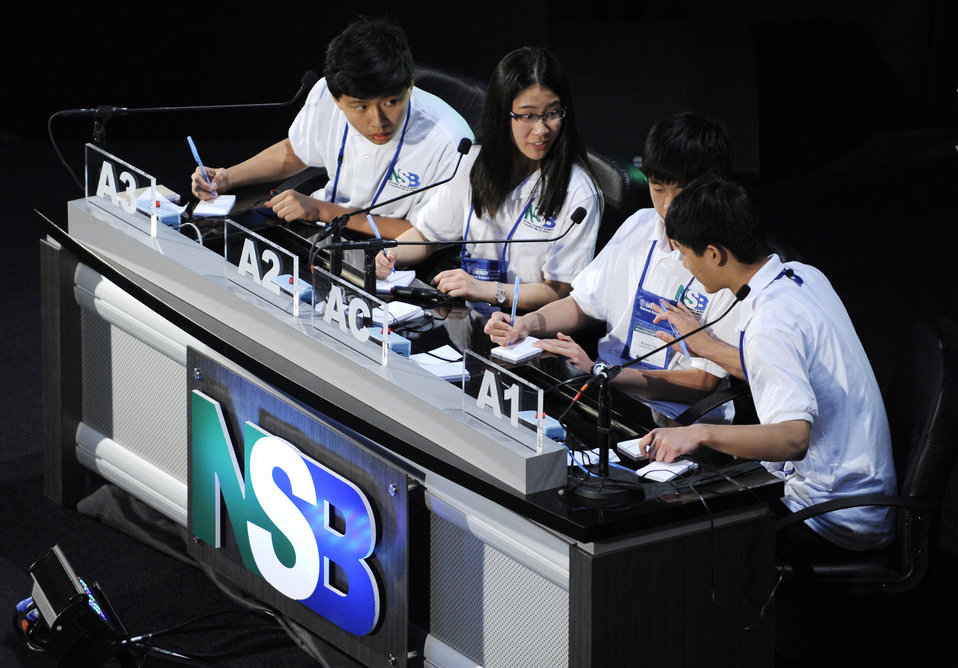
Students from Creekside Middle School in Carmel, IN won first place in the middle school competition of the 2013 National Science Bowl in Washington, DC.

The Department of Energy created the National Science Bowl in 1991 to encourage students to excel in mathematics and science and to pursue careers in these fields.